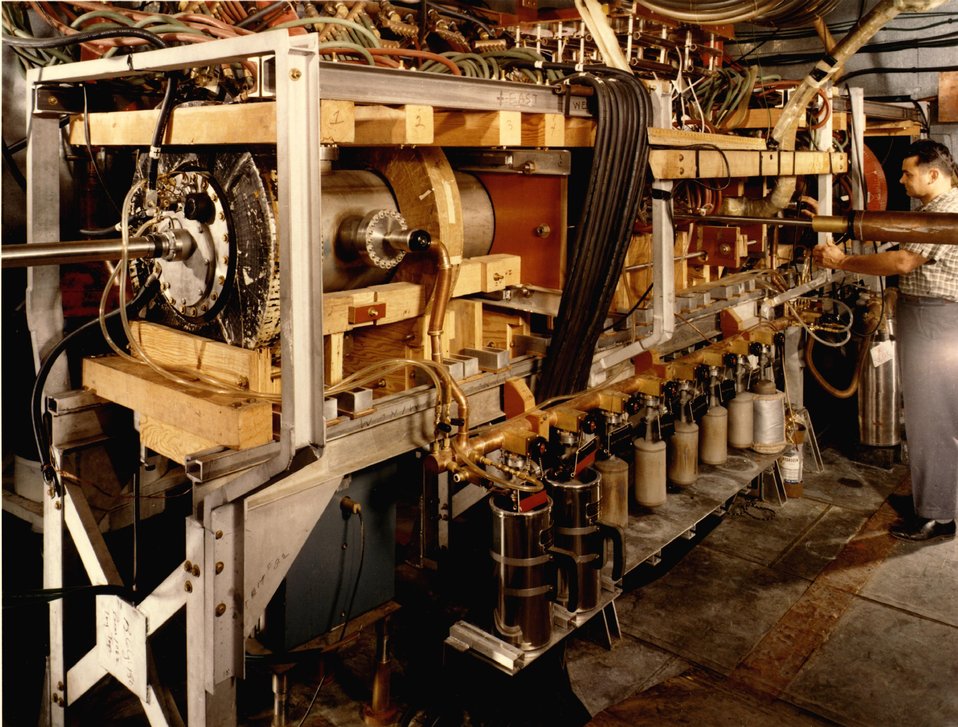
Table Top Mirror Machine.